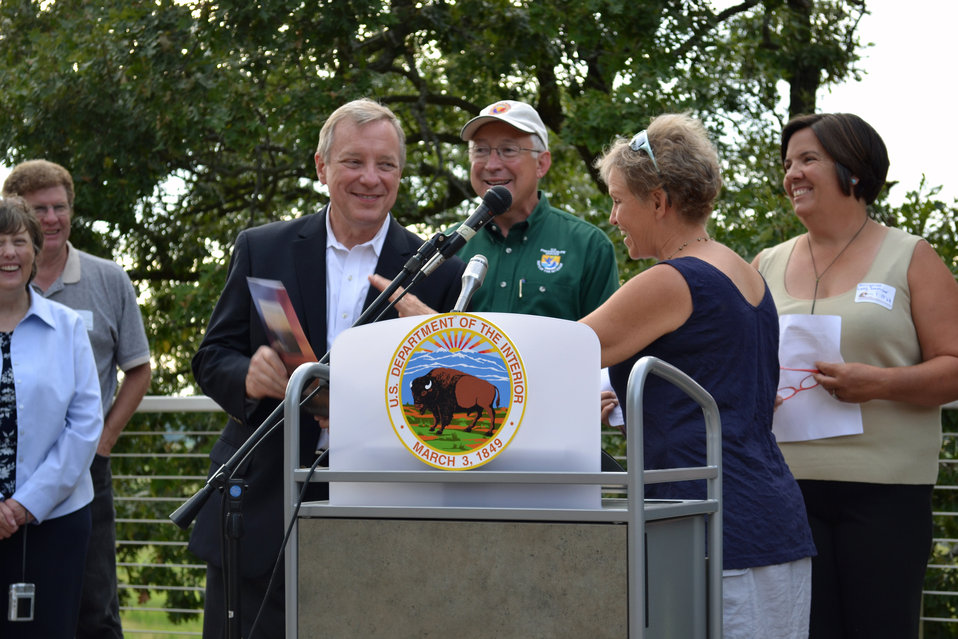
FOH Thanks Durbin

Friends of Hackmatack gave special thanks and recognition to Senator Dick Durbin.